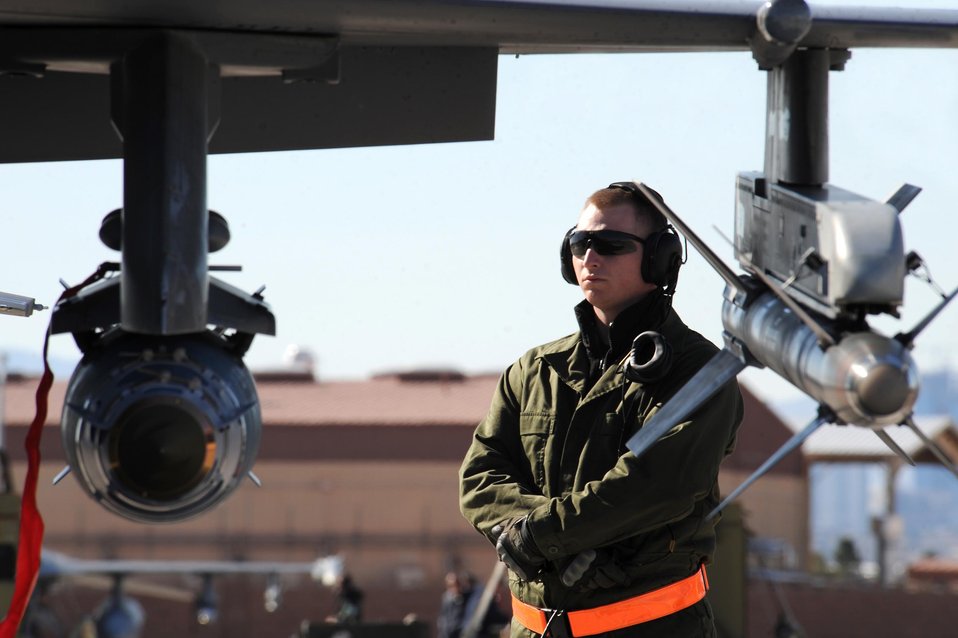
Armed and ready

An F-16CJ Fighting Falcon crew chief from Shaw Air Force Base, S.C., waits for his jet to taxi out for a training mission Jan. 27 during a Red Flag exercise at Nellis AFB, Nev. Red Flag is a multi-national exercise providing a realistic environment to practice combat scenarios.